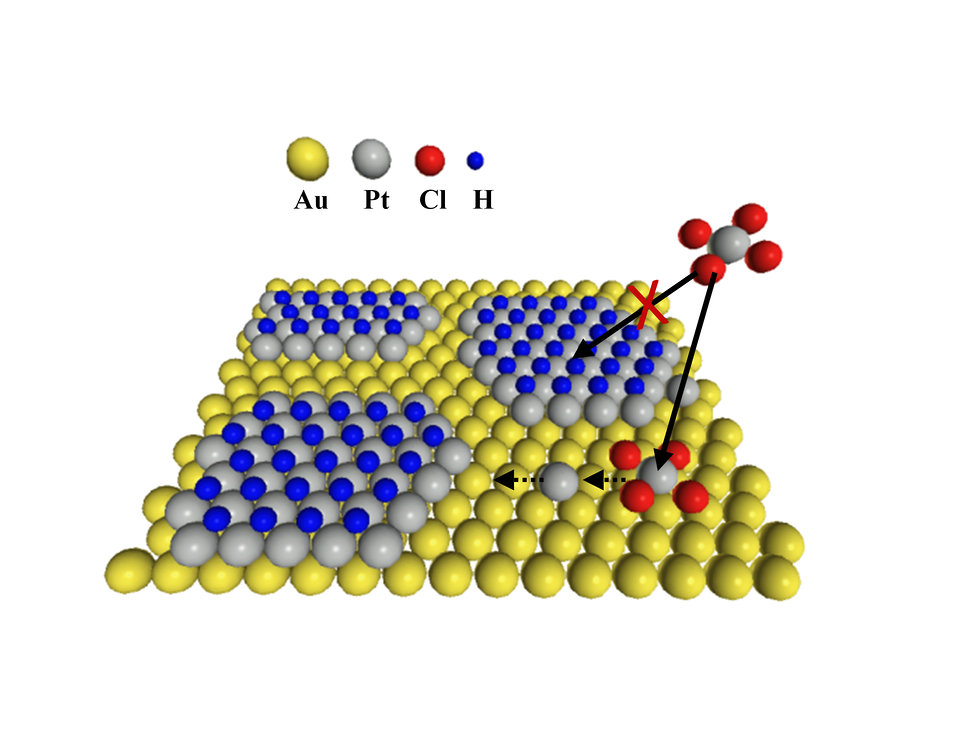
Platinum

Schematic shows self-quenched platinum deposition on a gold surface. Under a high driving voltage, platinum in solution (bound to four chloride atoms) can shed the chloride and bind to a location on the gold. Hydrogen rapidly adsorbs on the platinum, ensuring that the platinum forms an even surface a single atom thick.